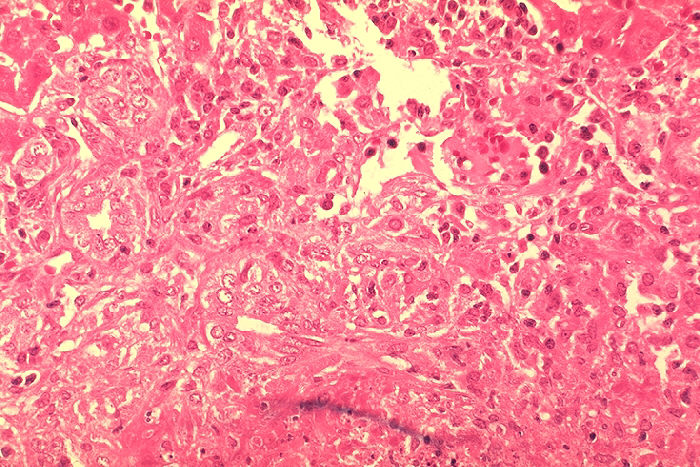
Histopathology of guinea pig liver in experimental Brucella suis infection.